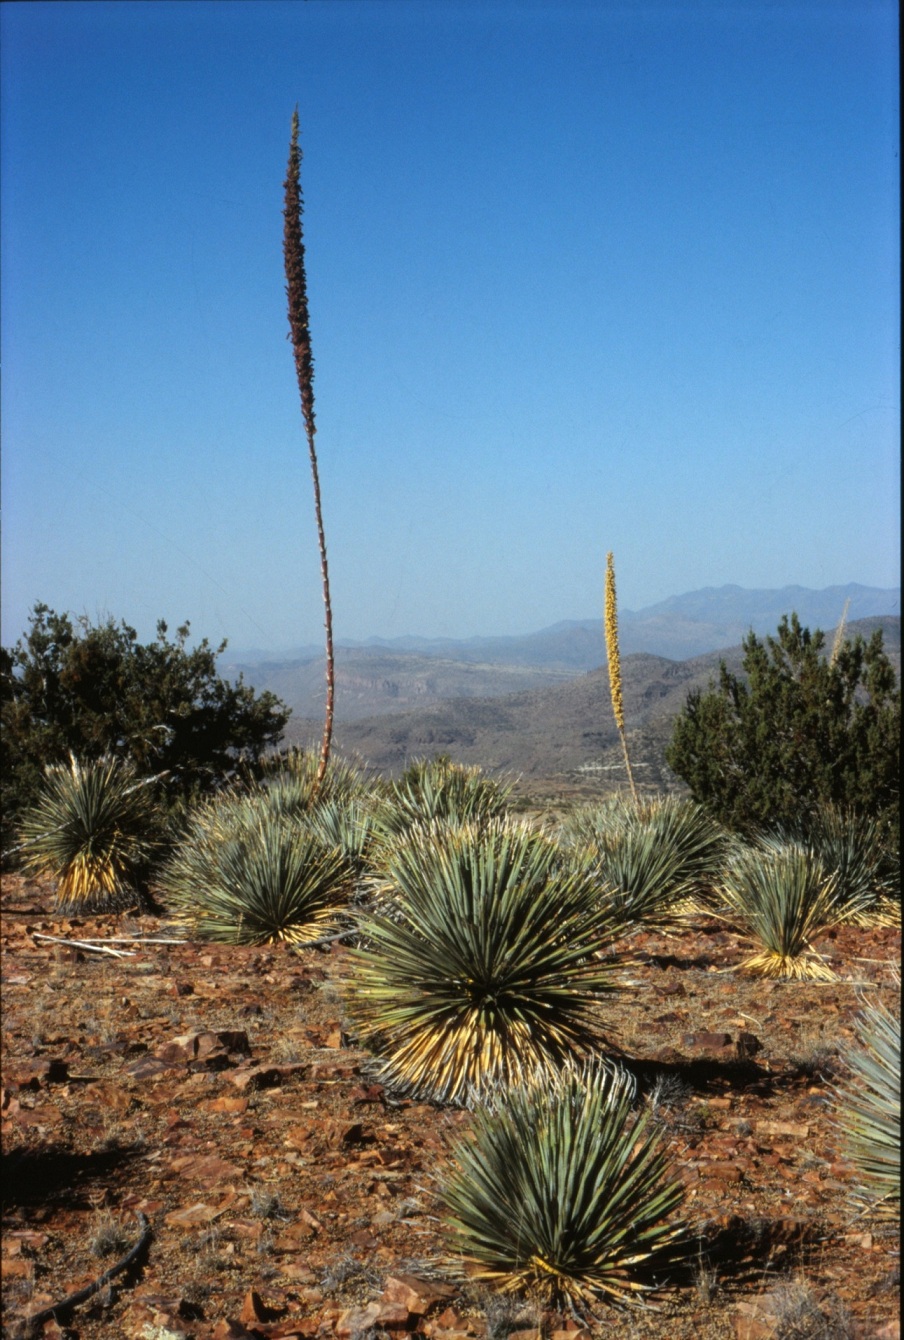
Dasylirion wheeleri